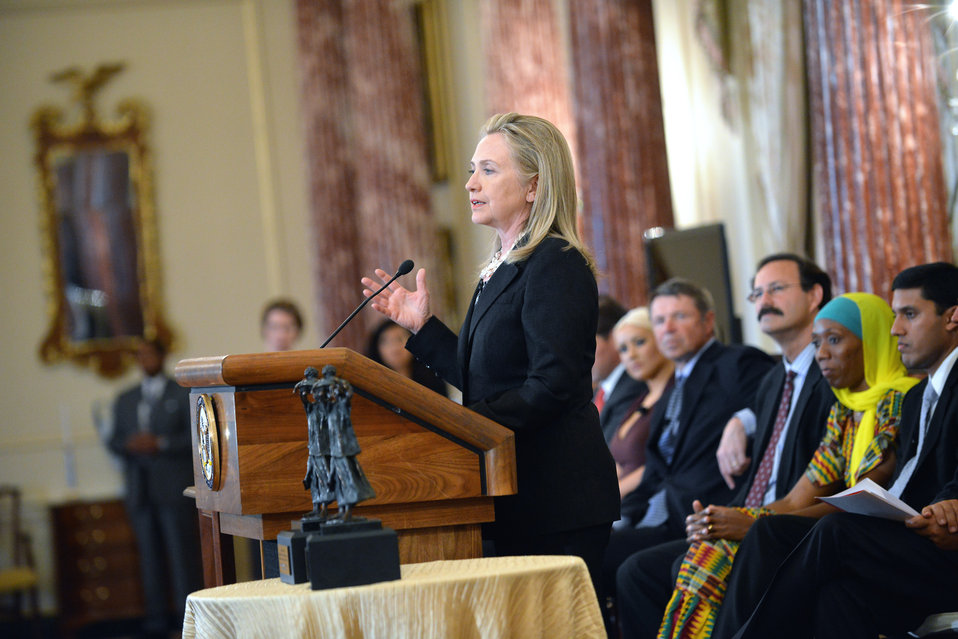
Secretary Clinton Delivers Remarks at the World Food Program-USA Awards Ceremony

U.S. Secretary of State Hillary Rodham Clinton delivers remarks at the World Food Program-USA Awards Ceremony at the U.S. Department of State in Washington, D.C., October 3, 2012.